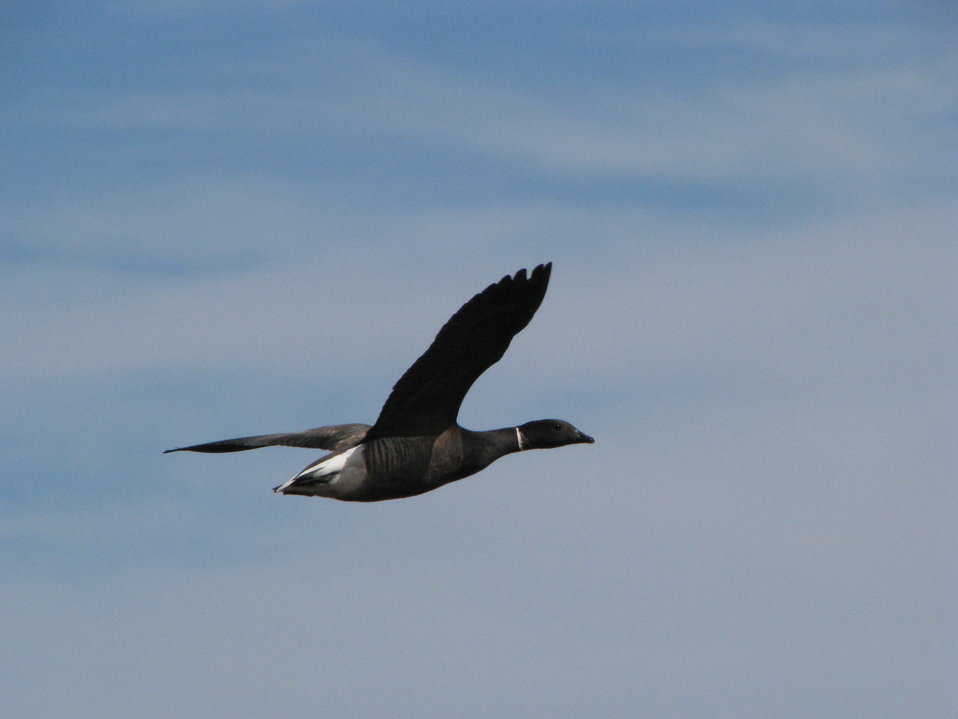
Black Brant in flight

Yukon Delta NWR